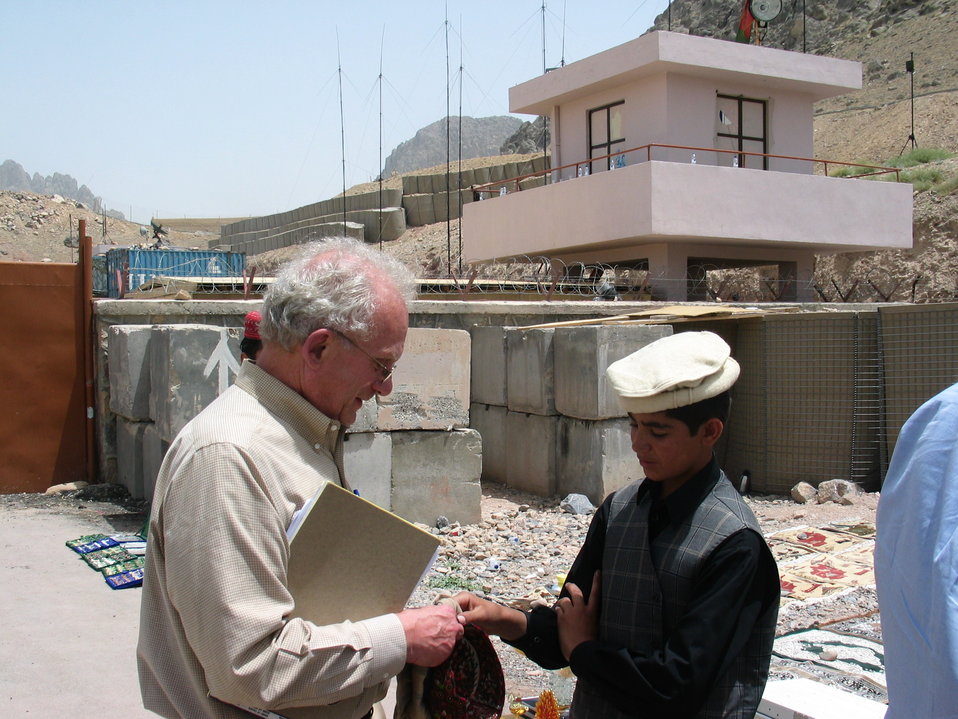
CODEL Berman